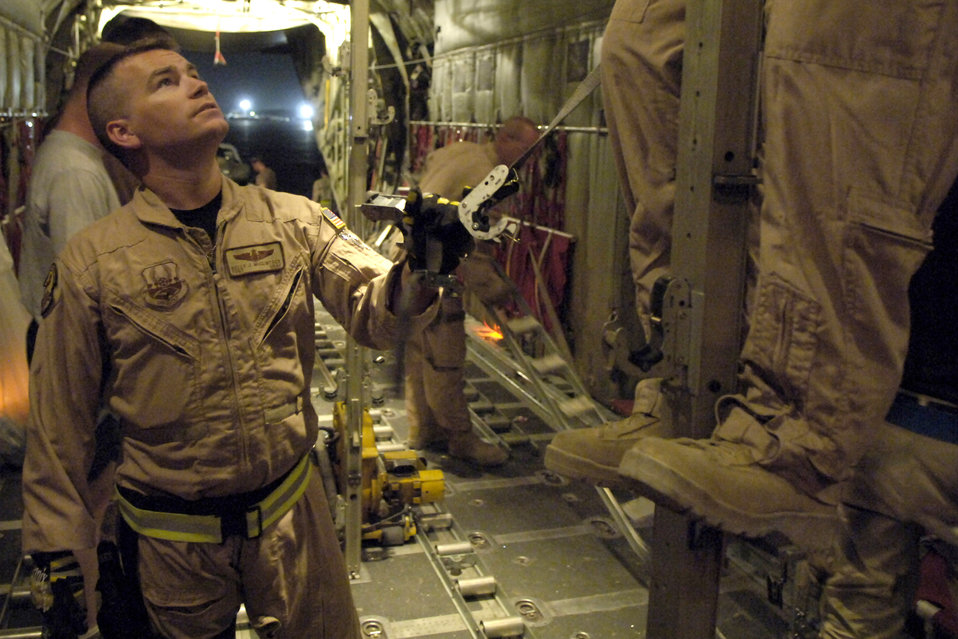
Medical care in the air

Tech. Sgt. Kelly McClintock helps reconfigure a C-130 Hercules for an aeromedical evacuation mission from Bagram Air Base, Afghanistan, on Thursday, June 8. Sergeant McClintock is assigned to the 455th Expeditionary Aeromedical Evacuation Flight. He is deployed from the Air National Guard's 146th Aeromedical Evacuation Squadron at Channel Island, Calif.